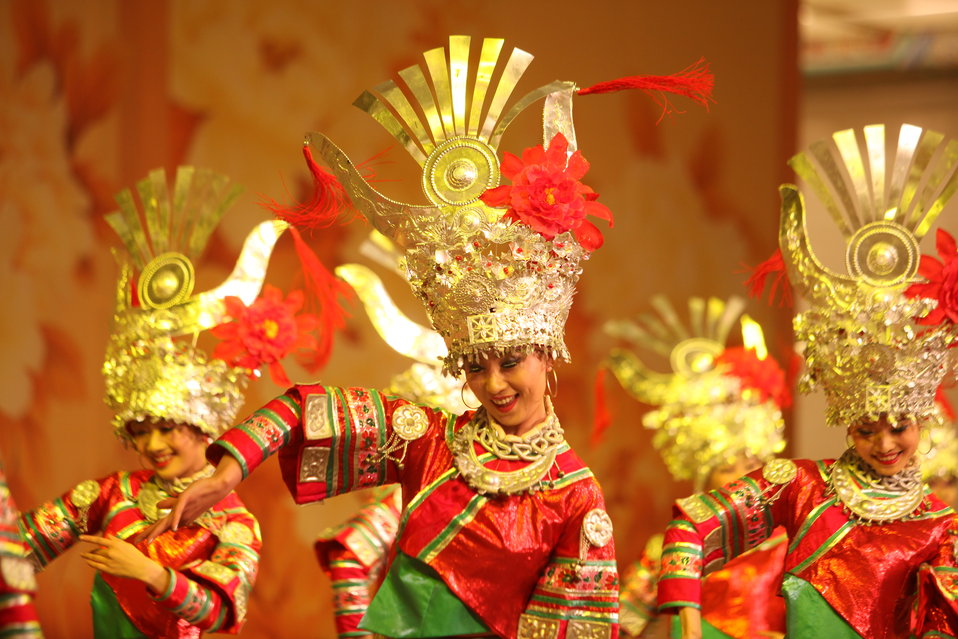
SandED 5/25/10

Performance at the S&ED Welcoming Dinner.